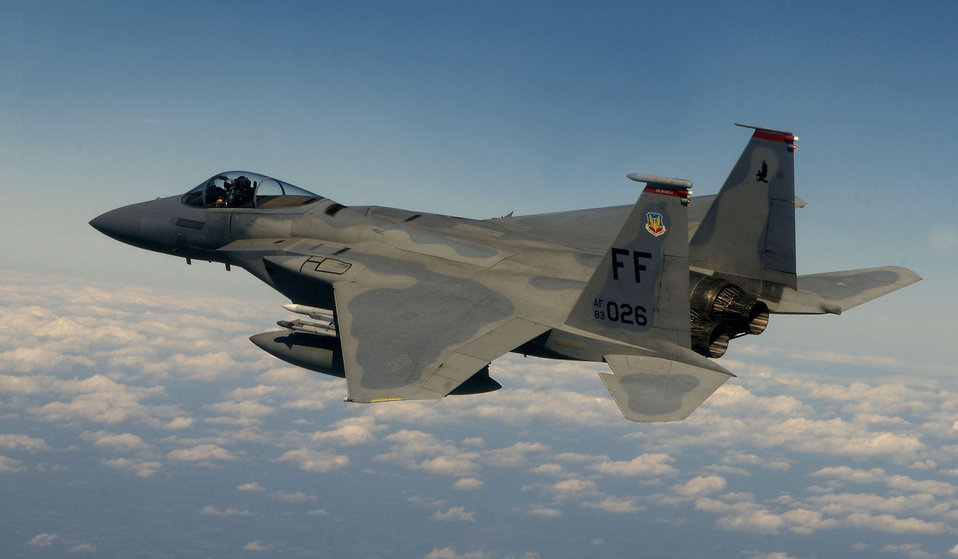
Keeping watch over the nation

Capt. Matt Buckner, an F-15 Eagle pilot assigned to the 71st Fighter Squadron at Langley Air Force Base, Va., flies a combat air patrol mission Oct. 7 over Washington, D.C., in support of Operation Noble Eagle.